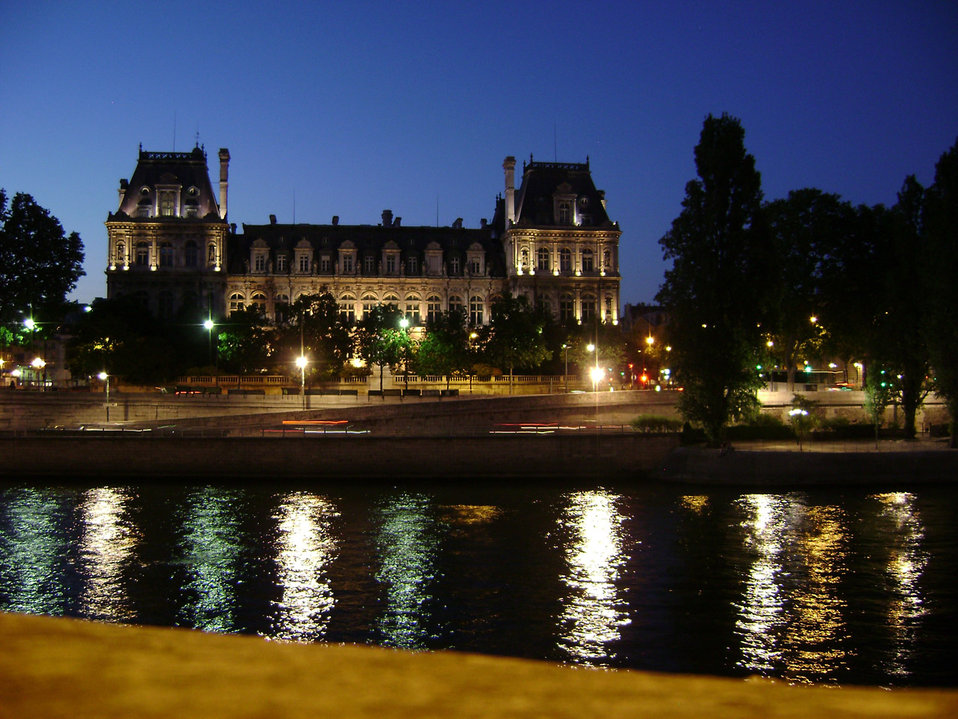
Night at the seine, paris.